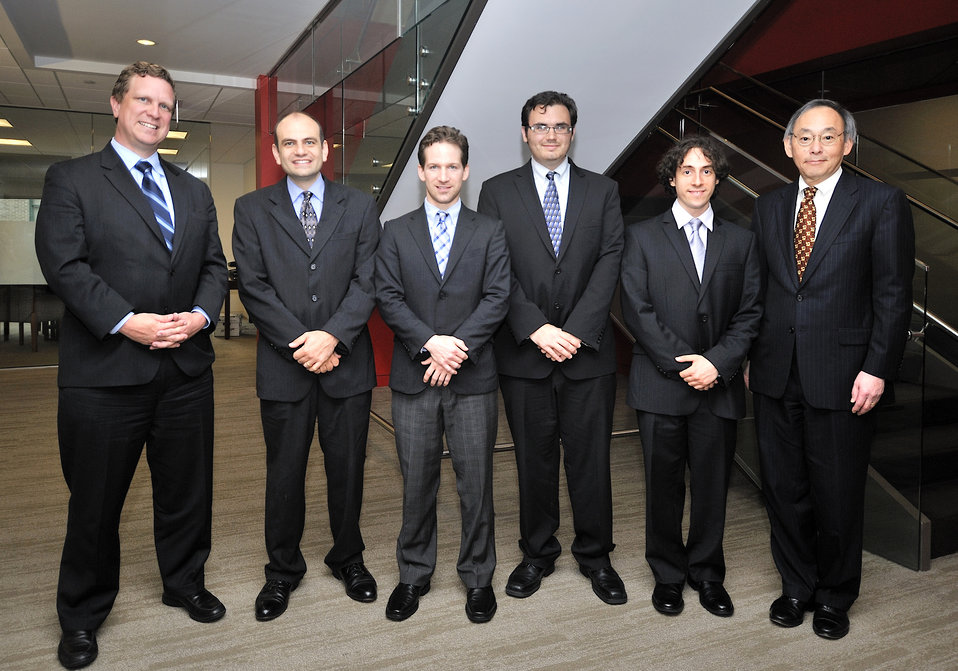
National Clean Energy Business Plan Competition

The National Clean Energy Business Plan Competition inspired nearly 300 university teams across the country to create new businesses to commercialize promising energy technologies developed at U.S. universities and the National Laboratories.